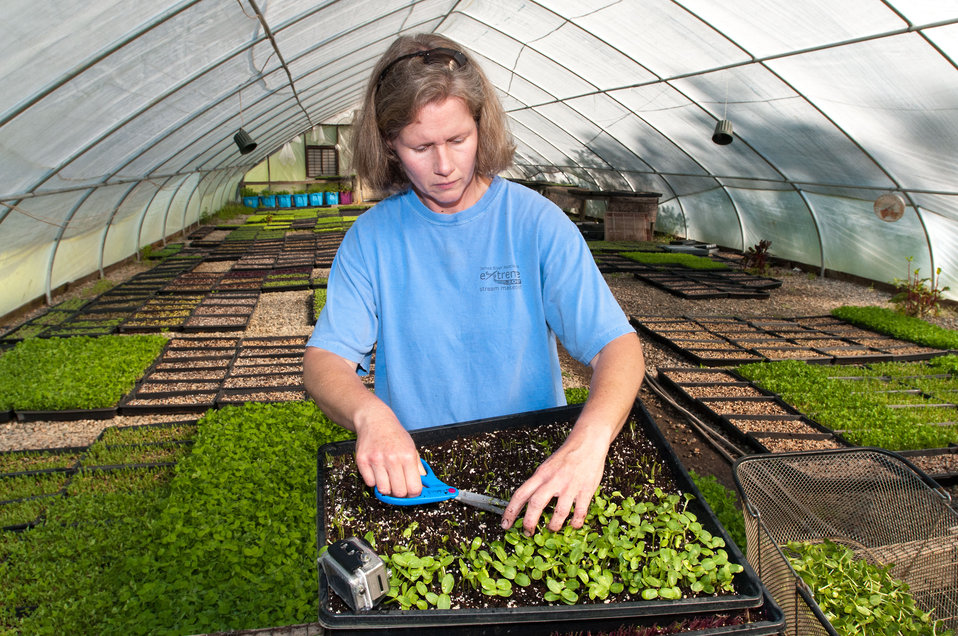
Rebecca Evans Chadwick gently gathers a small number of sunflower sprouts before she cuts them to the perfect bite-sized micro greens length for Manakintowne Specialty Growers, a 21-acre farm in Powhatan County, Virginia, on Friday, May 6, 2011. The farm where Jo Pendergraph, her family and team raise specialty produce for chefs and markets of Richmond, Charlottesville and Williamsburg, VA area. This includes the online food hub of Lulus Local Food served by the Fall Line Farms cooperative. This is one of the farms that chefs get those seemingly unique greens such as French Sorrel, Pea Shoots, Frisee, Tat soi, Mizuna, Pink/green radish shoots, Sunflower shoots, Baby red mustard, Tuscan Kale, Beet greens. All harvested by hand and scissors. As well as micro greens such as Pak choi, Tat soi, Mizuna, Purple kohlrabi, Shungiku (edible chrysanthemum), Ruby chard, Purple/Daikon/Triton radish, Red amaranth and Bull's Blood Beet. Edible flowers such as African Blue Basil, Nasturtiums, Johnny Jump Ups, and Chive blossoms Dianthus (pinks) are grown here. The seasonal choices are listed by suppliers and ordered by members on Lulus Local Food website, the food is distributed to pick-up points in the Richmond, VA area. They also offer a wide variety of household food staples and specialty fruits, vegetables, meats, soaps, eggs, cheeses, flowers, honey, pastas, sauces, syrups, baked goods, mushrooms, flour and grains from and for the Richmond. VA area.